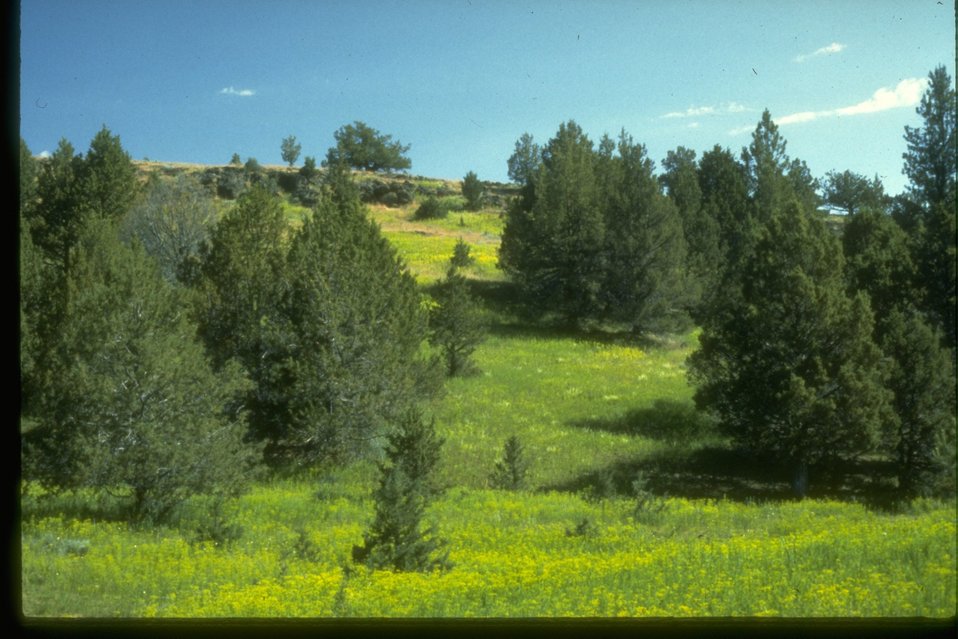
Leafy spurge near Fox Creek in Grant County.